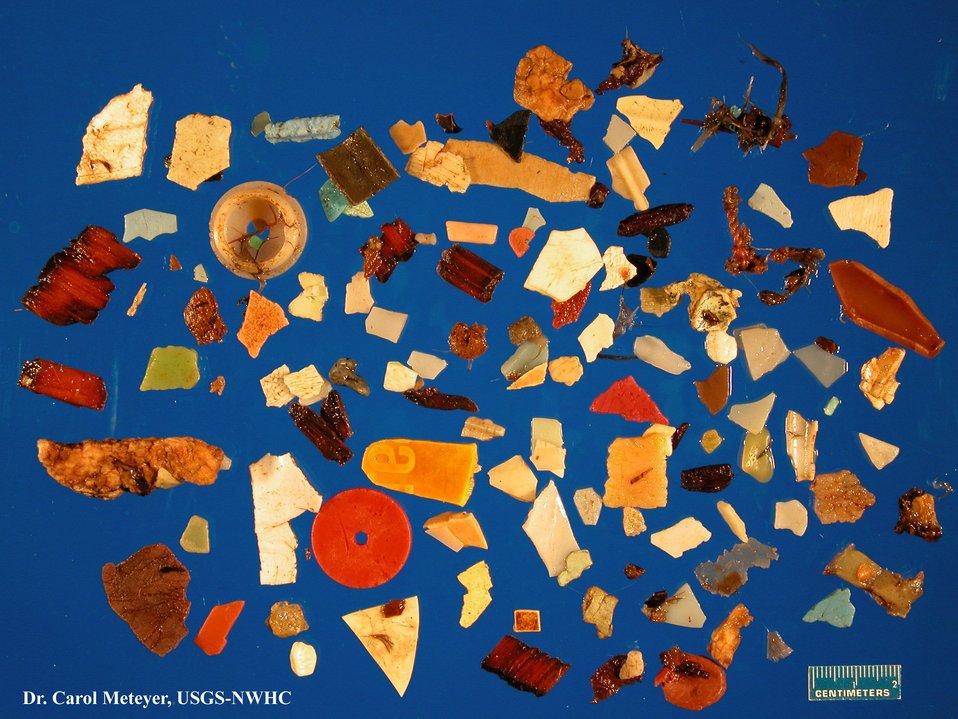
Plastic found inside one dead Fulmar

Photo shows all of the pieces of plastic that were removed from the stomach of a single north fulmar, a seabird, during a necropsy at the National Wildlife Health Lab.